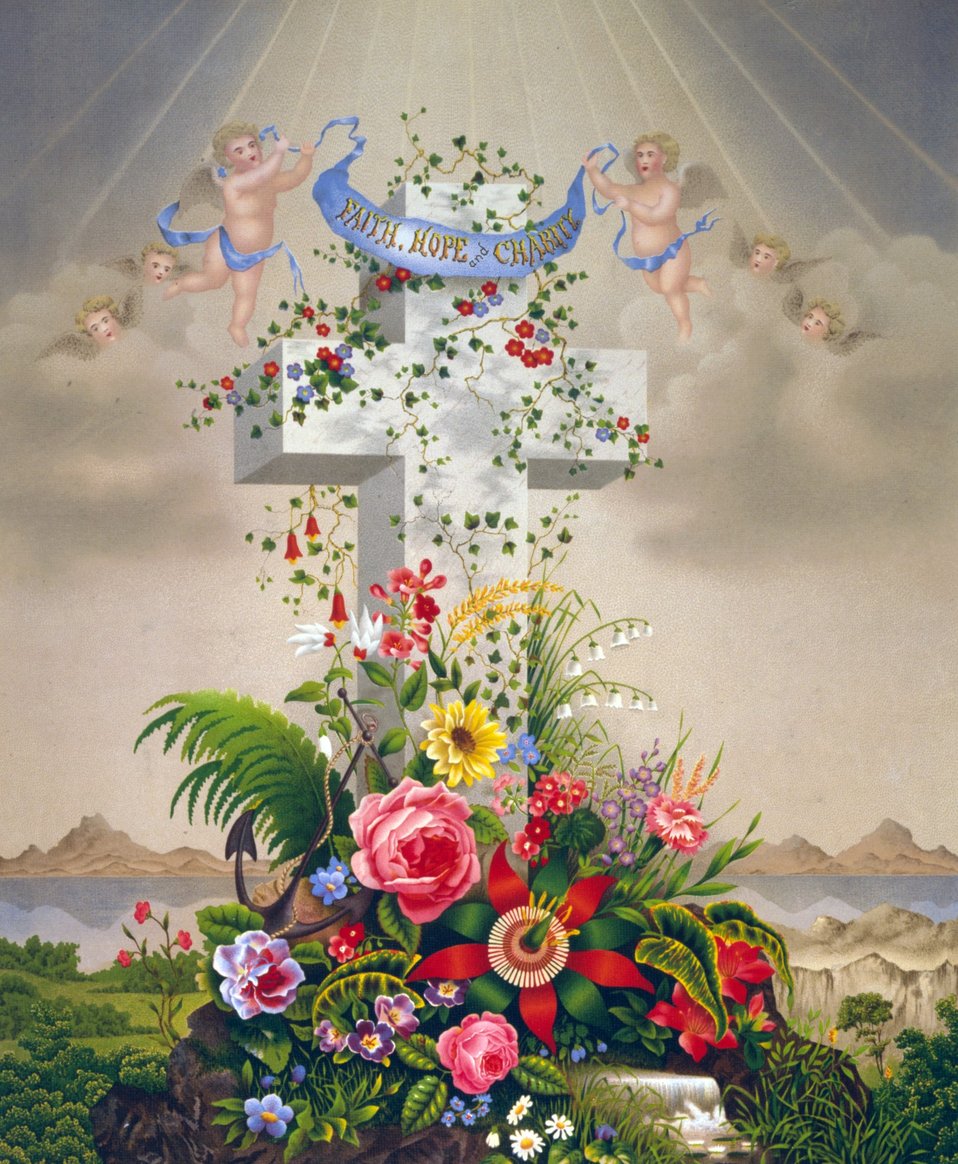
Faith hope charity painting

Public domain vintage painting of cross, cherubs and banner.